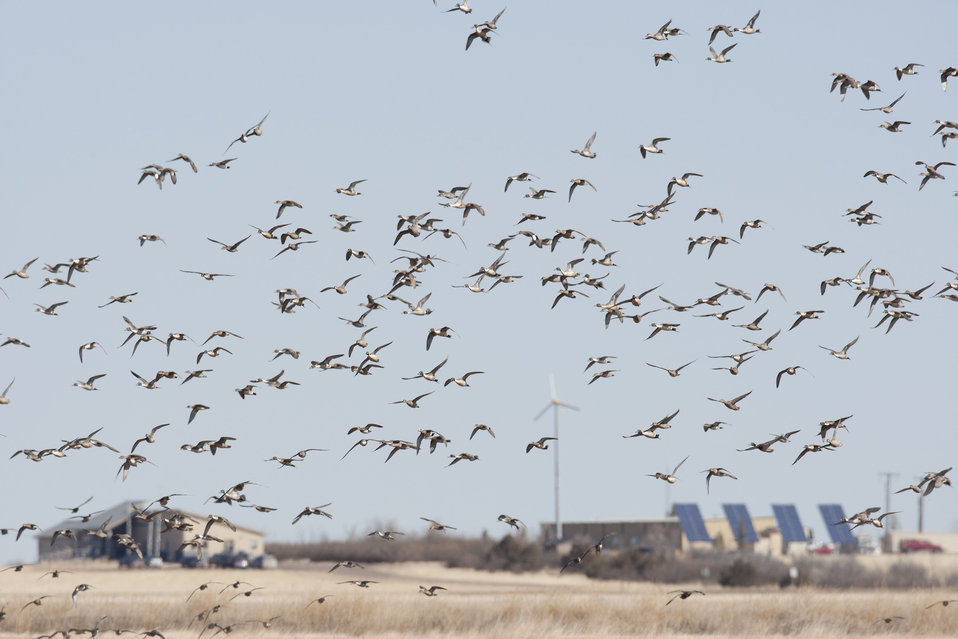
A Flock of Waterfowl Flying Above the Refuge buildings

The lands of the refuge were established to protect and provide habitat for migratory birds that cross State lines and international borders and are by law a Federal trust responsibility.

The refuge is of great value to waterfowl and shorebirds, as well as other migrating water-dependent bird species, because of the diversity of wetland and upland habitats that provide for the diverse life cycle needs of these species.